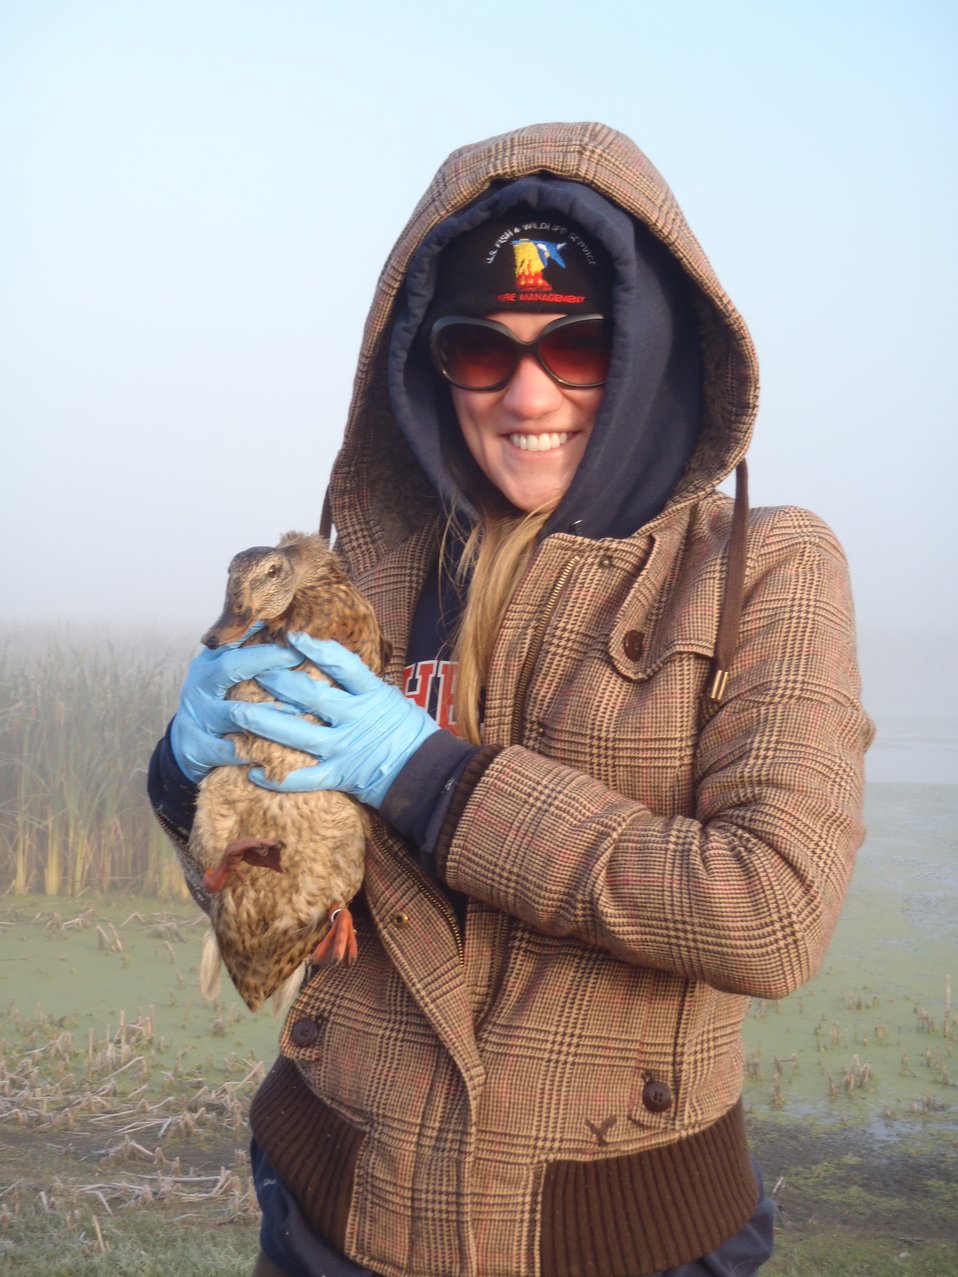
Banding ducks, Agassiz National Wildlife Refuge, MN

2011 Wilderness Fellow Rachael Carnes banding a duck, September 2011